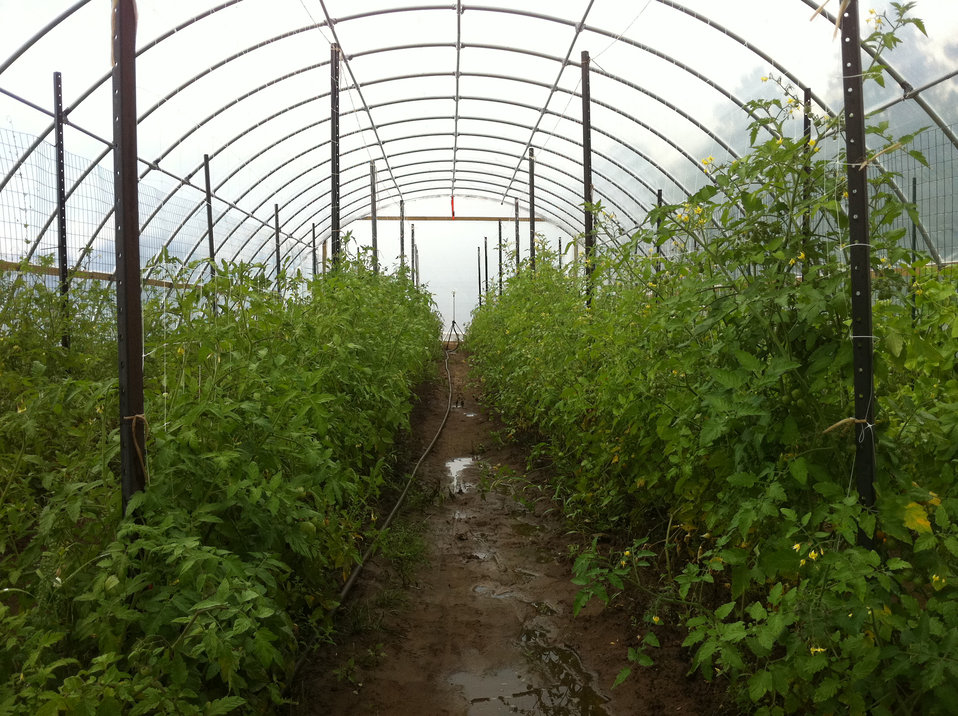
Tomatoes are some of the many vegetables on Owl Forest Farms grown in a high tunnel.